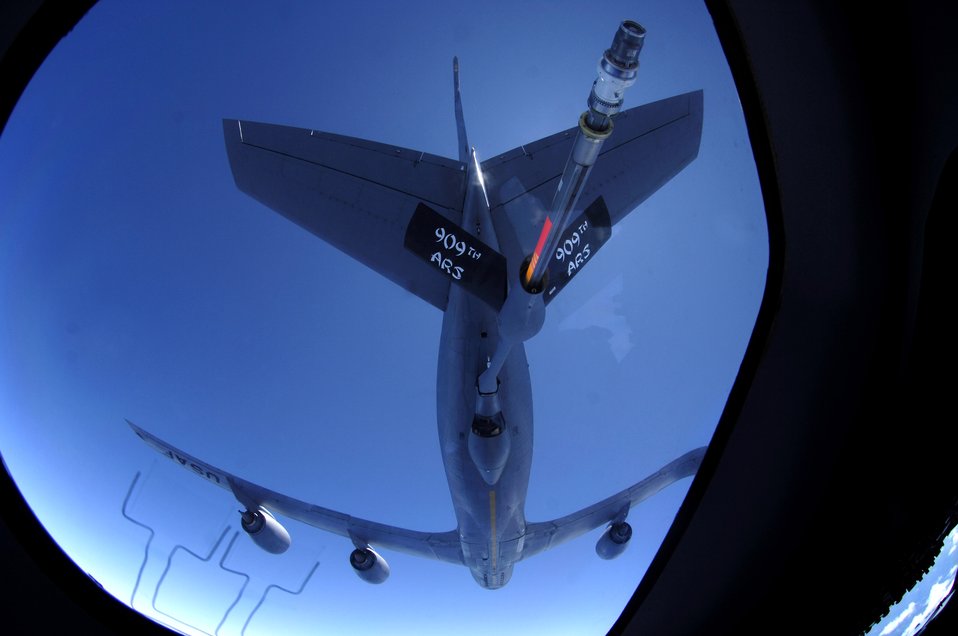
Hickam crew prepares for AMC Rodeo

A C-17 Globemaster III approaches the boom of a KC-135 Stratotanker June 22 during aerial refueling practice over the Pacific Ocean. The C-17 from the 535th Airlift Squadron, Hickam Air Force Base, Hawaii, and the KC-135 from the 909th Air Refueling Squadron at Kadena Air Base, Japan, are practicing for the upcoming 2007 Air Mobility Command Rodeo.